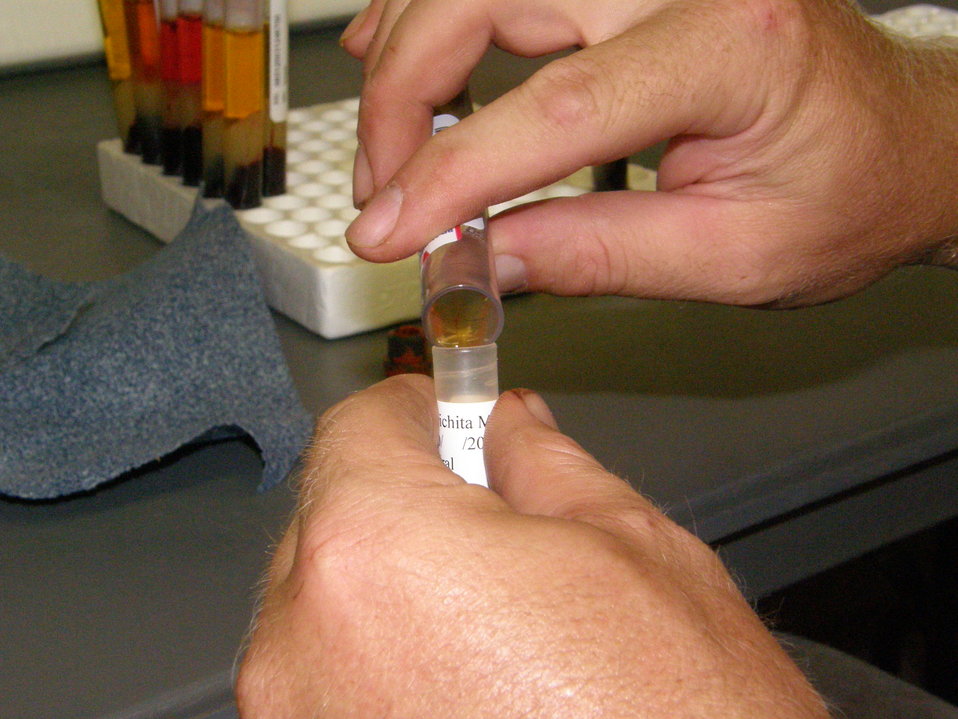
Pouring a Serum Sample

Extra serum is stored in an archive maintained by the Wildlife Health Office. Samples are stored at -80 degrees C to maintain long-term viability for diagnostic testing.